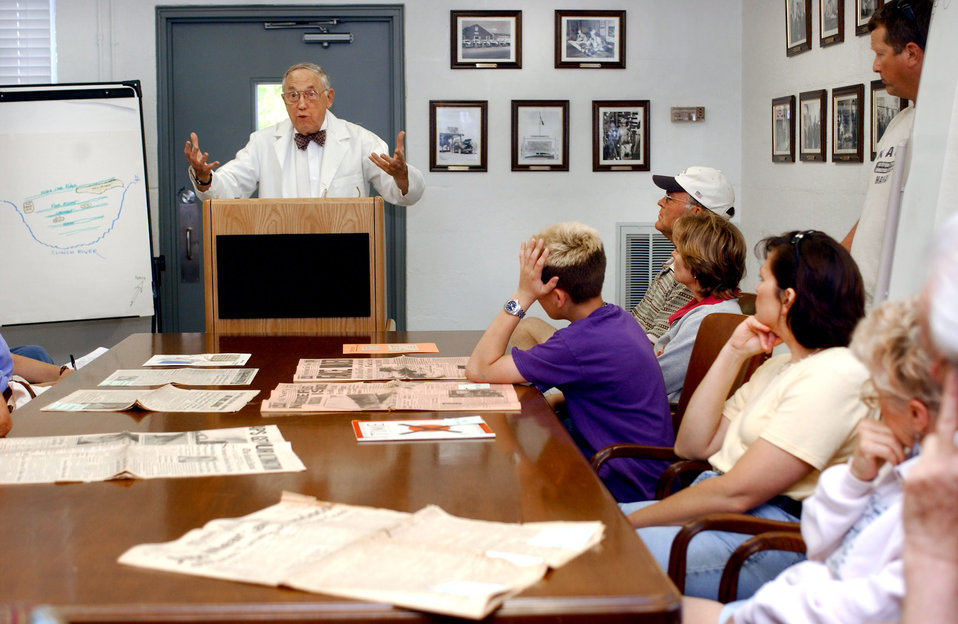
Bill Wilcox Lecturing to Visitors in a Oak Ridge Guard House 2003

03-094 DOE photo Lynn Freeny 5-17-2003 Oak Ridge Tennessee